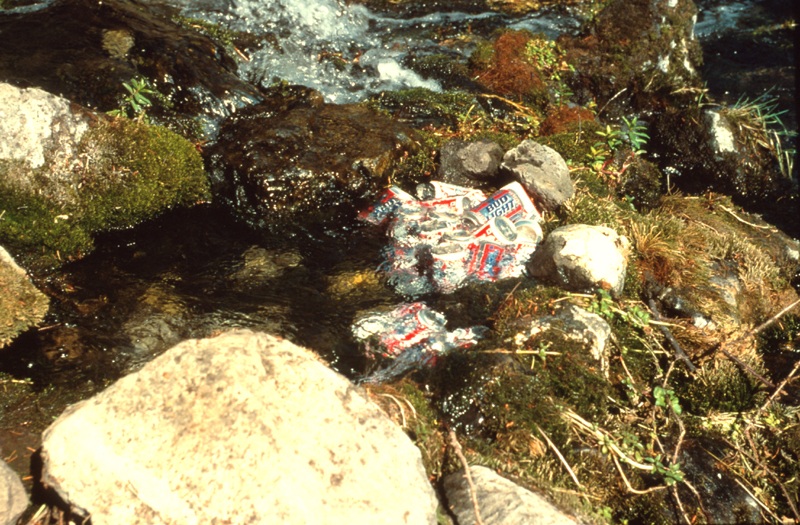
South Fork of the Snake River